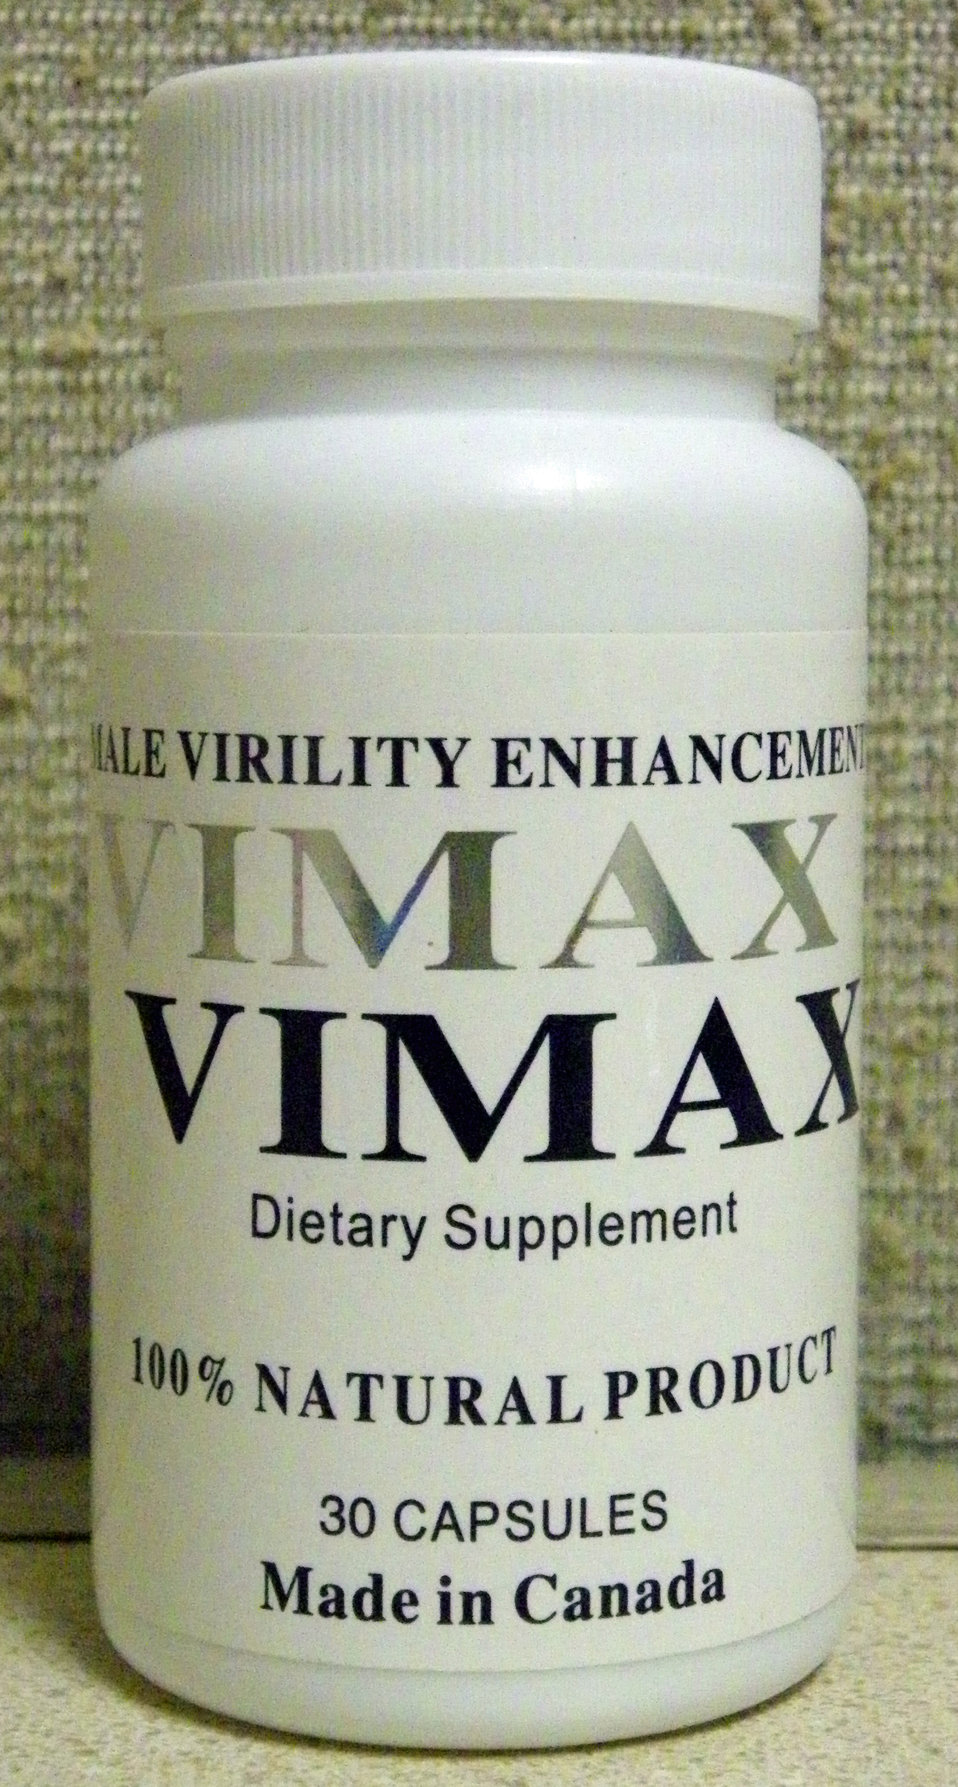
Vimax

January 28, 2014 - The FDA is advising consumers not to purchase or use Vimax, a product promoted and sold as a dietary supplement for sexual enhancement. The product was found to contain undeclared tadalafil.